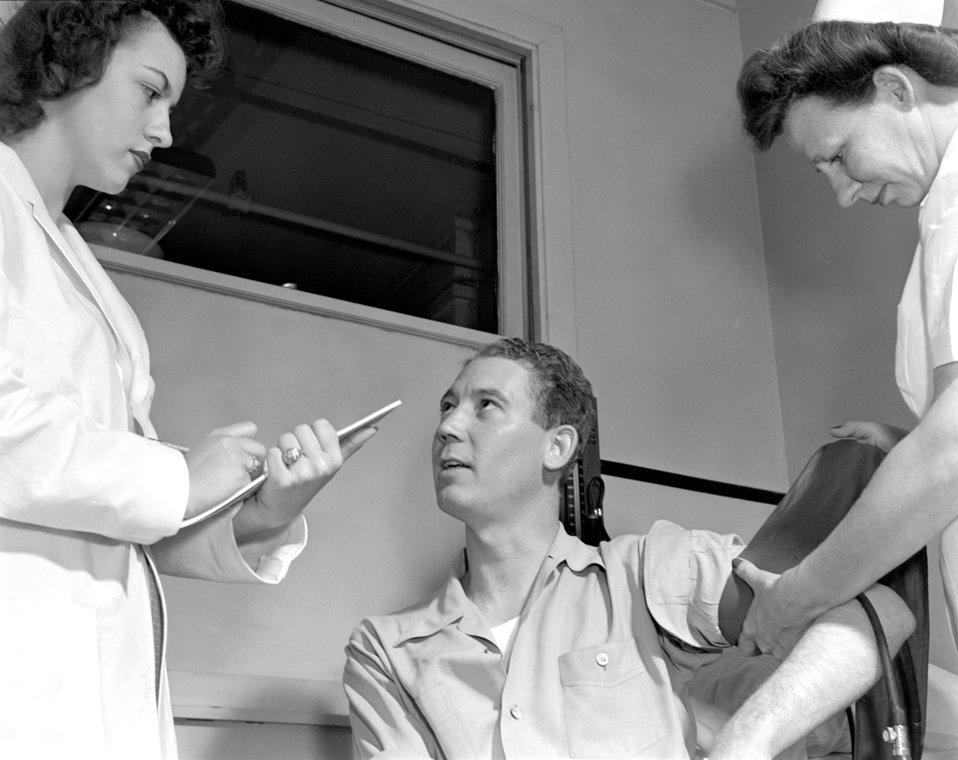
Emergency Admittage Office Hospital Oak Ridge 1947

3452-3 DOE photo Ed Westcott 5-9-1947 Oak Ridge Tennessee